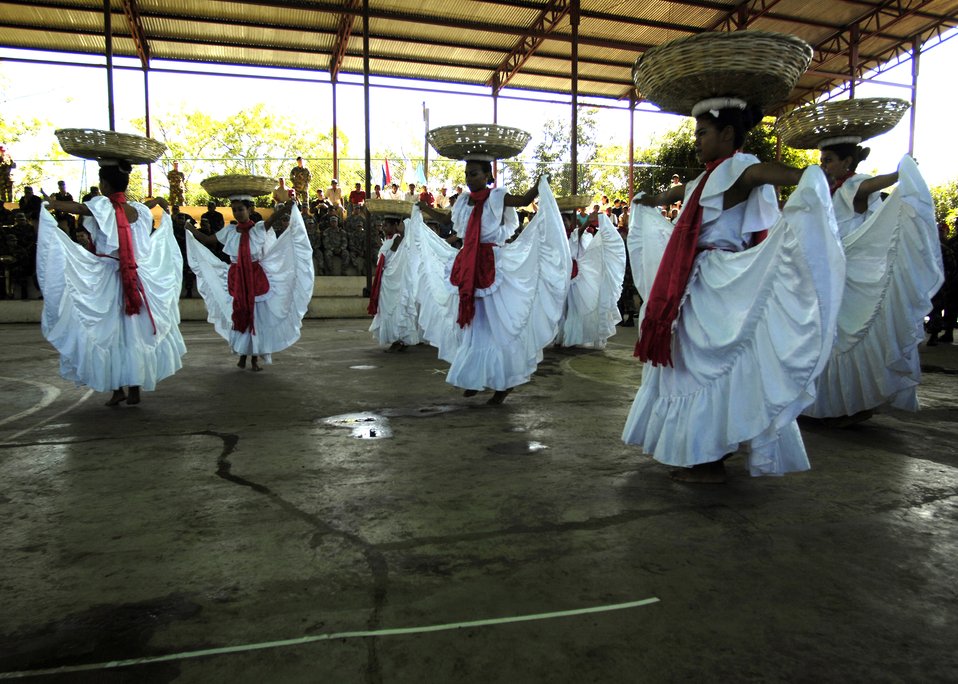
New Horizons-Nicaragua 2007

Students from the San Francisco School Dance Group of Santa Teresa perform a traditional Nicaraguan dance during the opening ceremonies of New Horizons-Nicaragua 2007, Feb. 15.